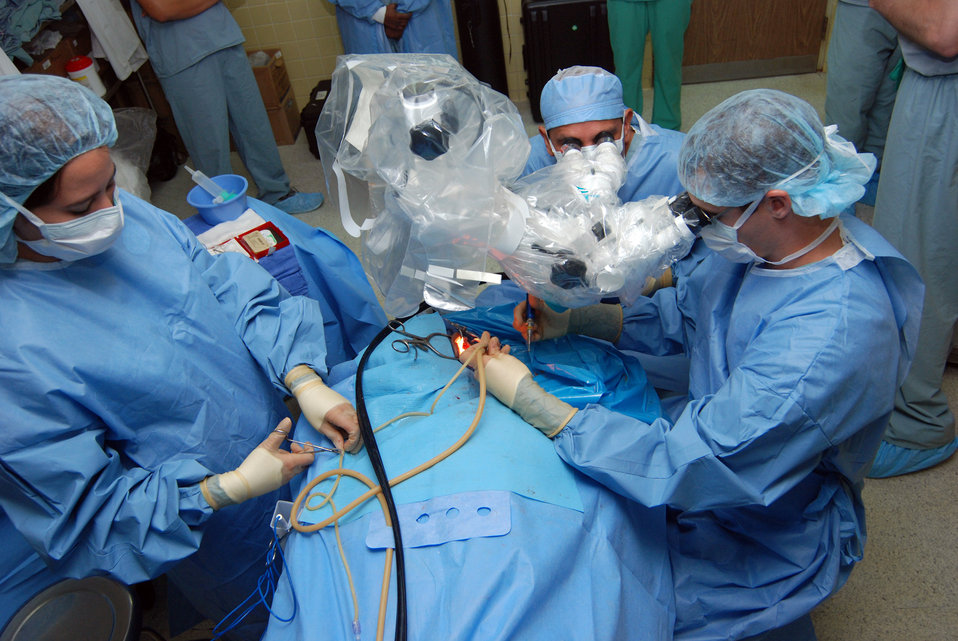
Wilford Hall team treats ENT patients in Honduras

A surgical team from Wilford Hall Medical Center, San Antonio, Texas, performs ear surgery on a patient June 17 at Hospital Escuela in Tegucigalpa, Honduras. A 14-person team from WHMC spent two weeks performing ear, nose and throat procedures, as well as providing hearing tests and hearing aid fittings in Honduras.